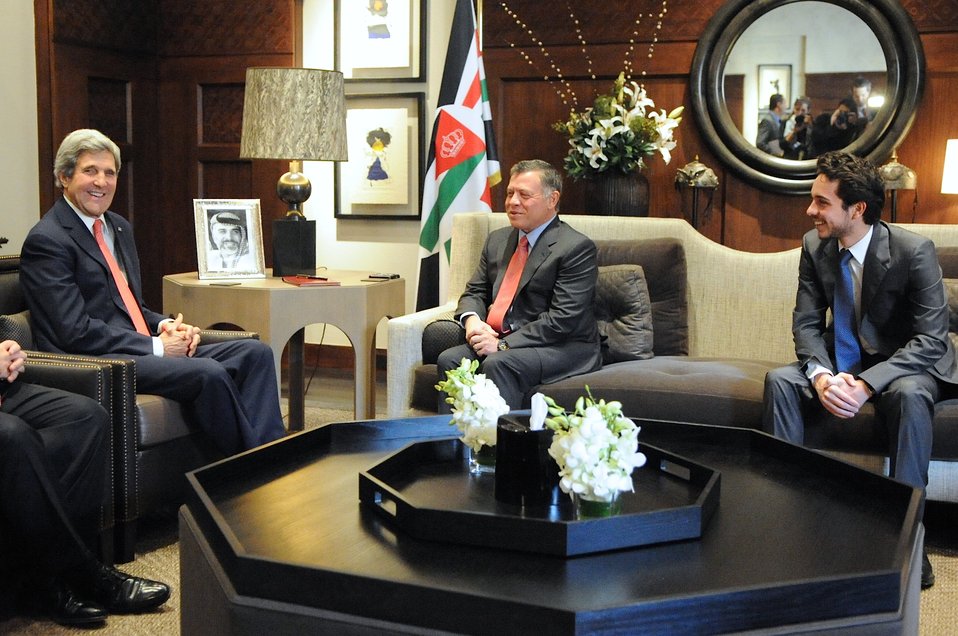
Secretary Kerry Meets With King Abdullah II, Crown Prince Hussein

U.S. Secretary of State John Kerry shares a laugh with King Abdullah II and his son Crown Prince Hussein after arriving in Amman on January 5, 2014, to brief Jordanian officials on his Middle East peace talks.